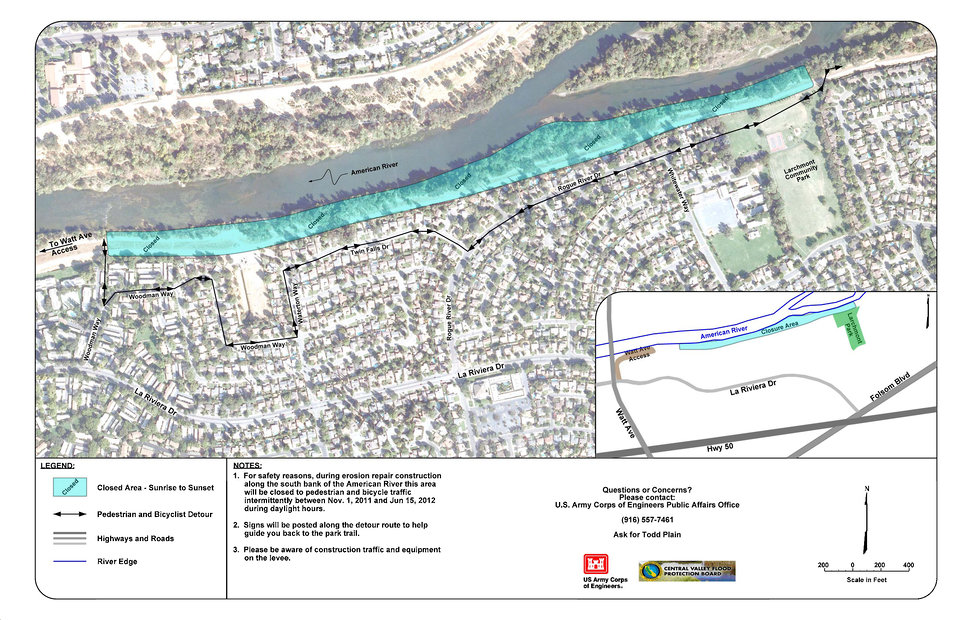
Local levee improvements 11x17 NOV11

This U.S. Army Corps of Engineers Sacramento District graphic identifies construction areas and detours around two critical erosion sites under repair along the American River’s south bank in Sacramento, Calif. Several of these maps have been sent to the local public and will be posted along the detour route from November 2011 through June 2012. The construction is part of the Sacramento River Bank Protection Project to repair erosion, levees and reduce flood risk for Sacramento.